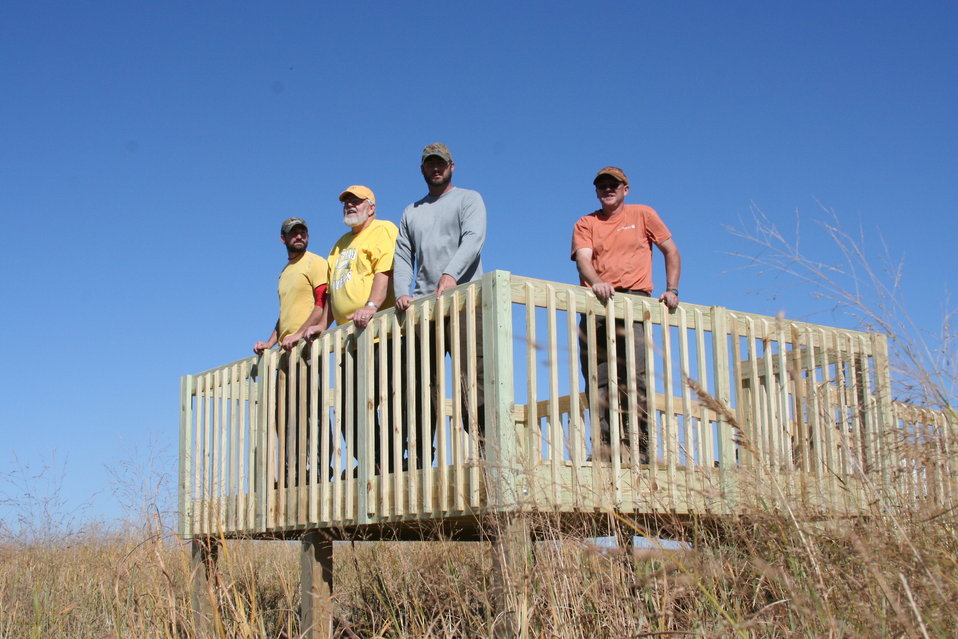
New Observation Deck

Local Friends Group and USFWS staff posing after all their hard work of building a new observation deck on our Maga Ta-Hohpi WPA.